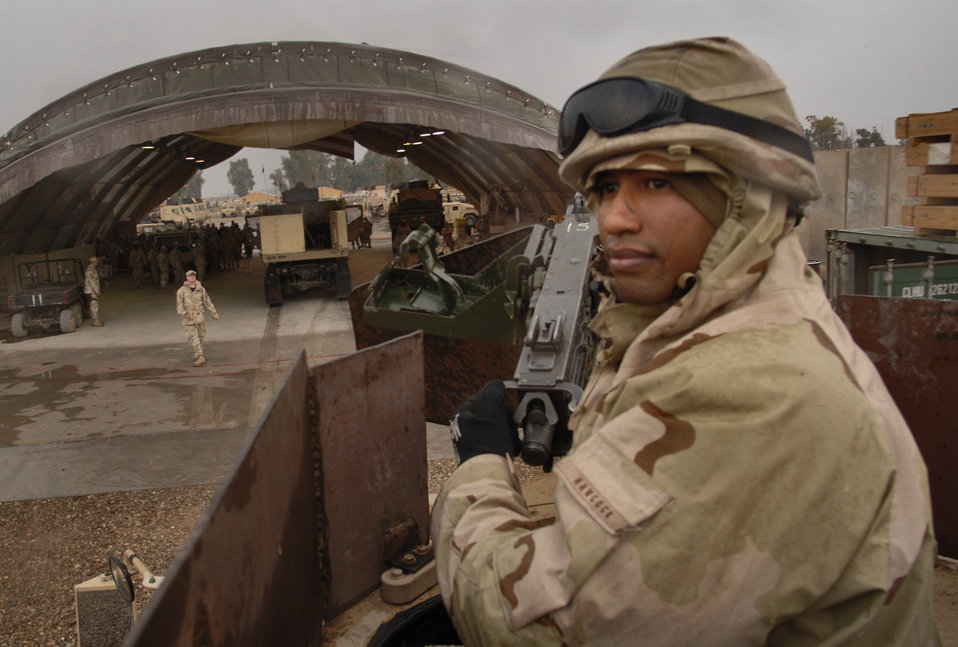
4 million miles

BALAD AIR BASE, Iraq (AFPN) -- Staff Sgt. Viktor Hancock checks the area behind an armor-modified vehicle as he heads to debrief with other Airmen. The Airmen celebrated their return from a convoy security mission that made the 4-million mile mark. Sergeant Hancock is a gunner with the 732nd Expeditionary Logistics Readiness Squadron and is deployed from Nellis Air Force Base, Nev.